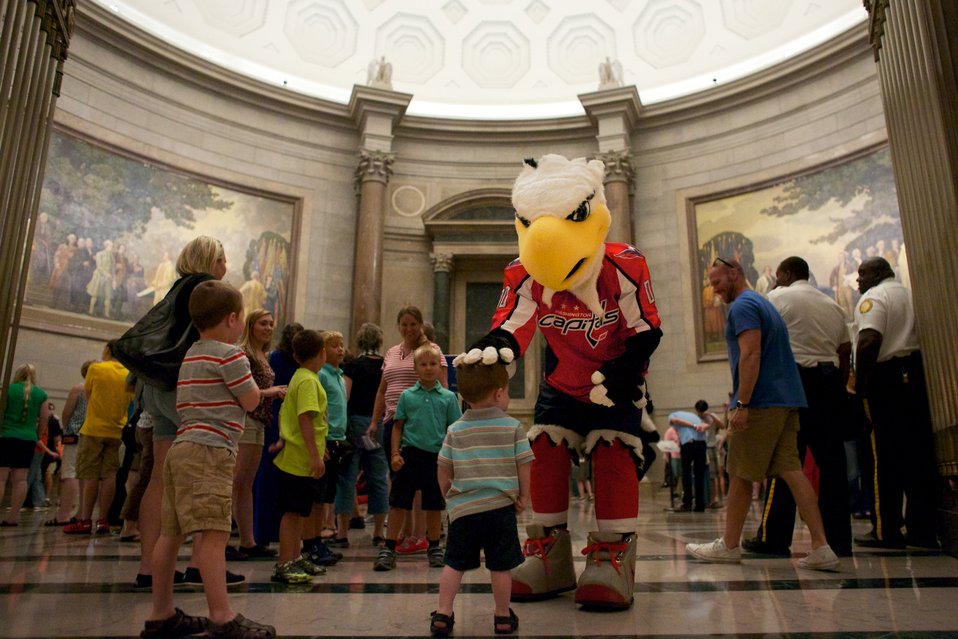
Washington Capitals mascot Slapshot visits the National Archives